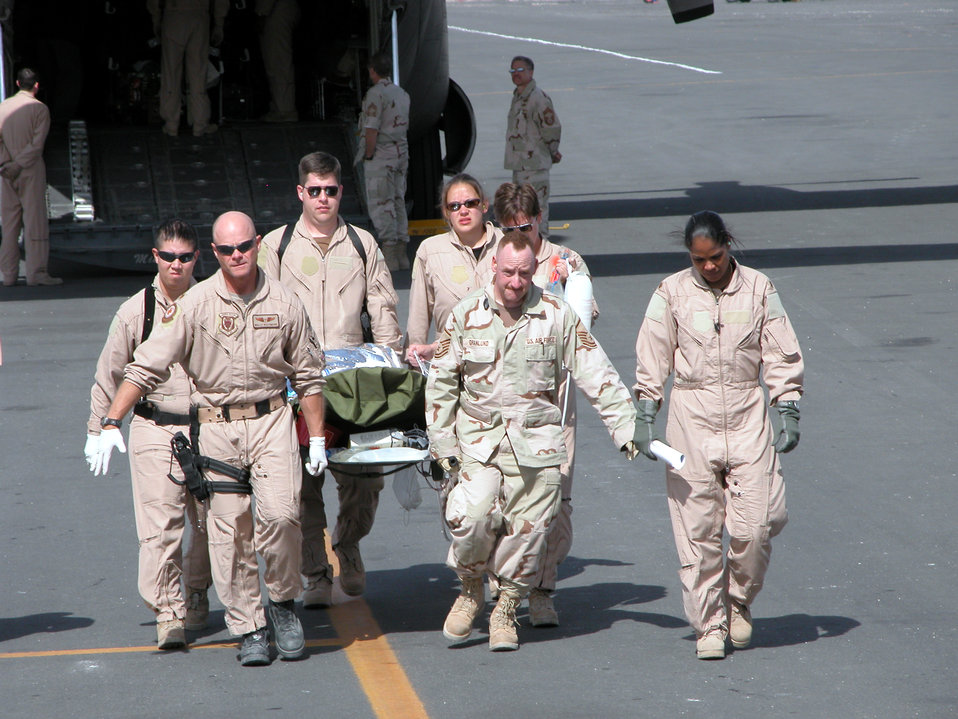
Transfer between aircraft

SOUTHWEST ASIA -- Medical workers and aircrew members transfer a patient from one C-130 Hercules to another that was waiting to take off. The patient was transported to Baghdad on Jan. 28. A critical care air transport team from the 379th Aeromedical Squadron managed the patient's care from Afghanistan to Baghdad.